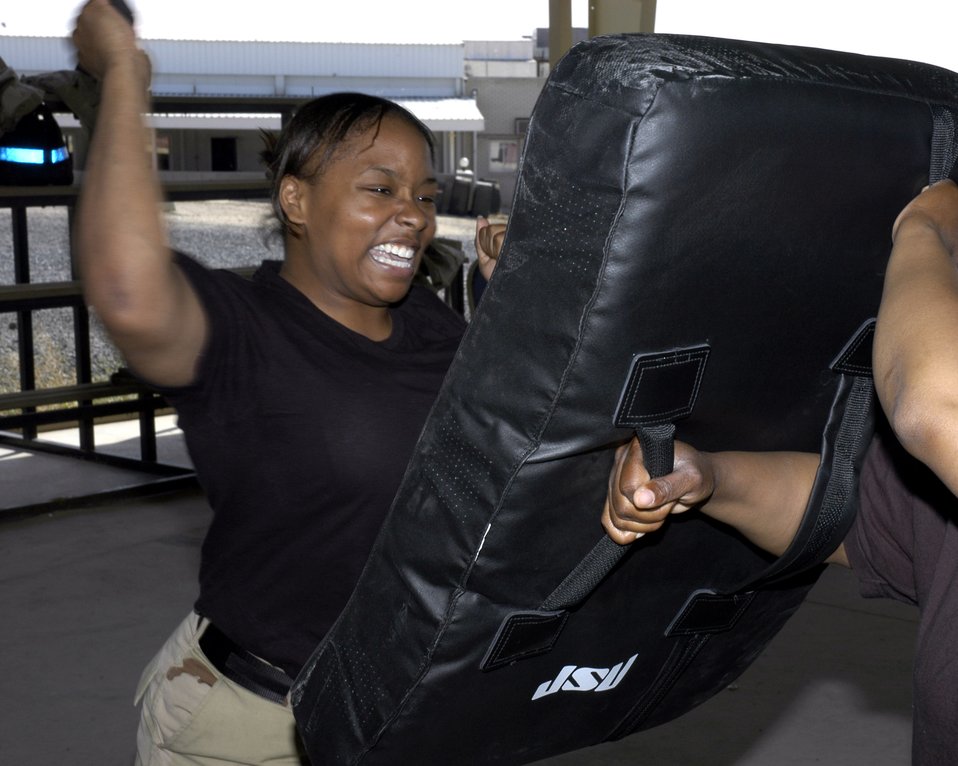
Defensive forces

Airman 1st Class Deloric Harrison, a force protection member with the 386th Air Expeditionary Wing, takes part in a personal defense class March 30 in Southwest Asia. All 386th AEW force protection personnel are trained in the use of the ASP, an extending baton used by police and security forces.